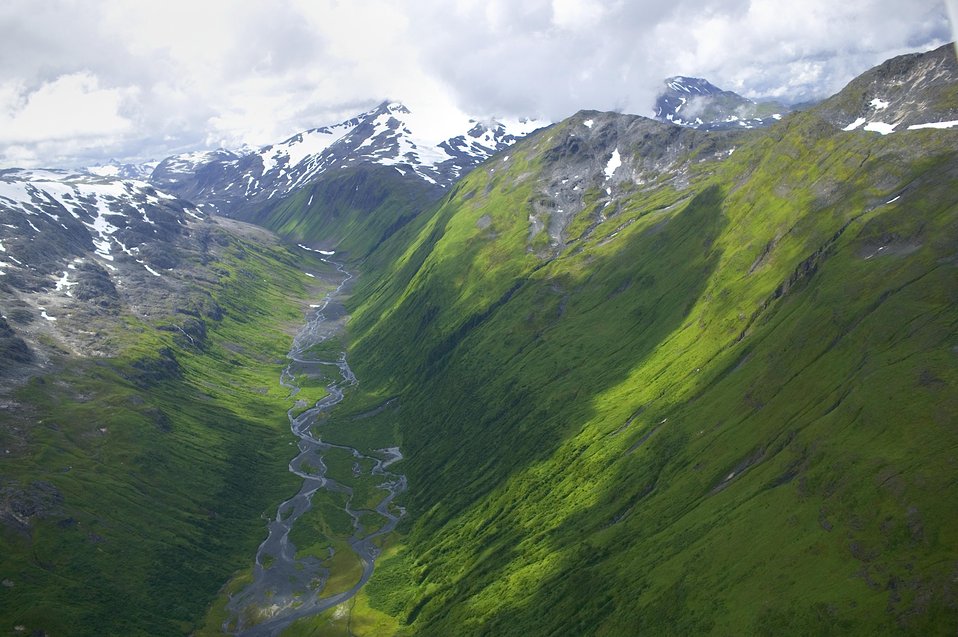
Scenery of Kodiak Refuge